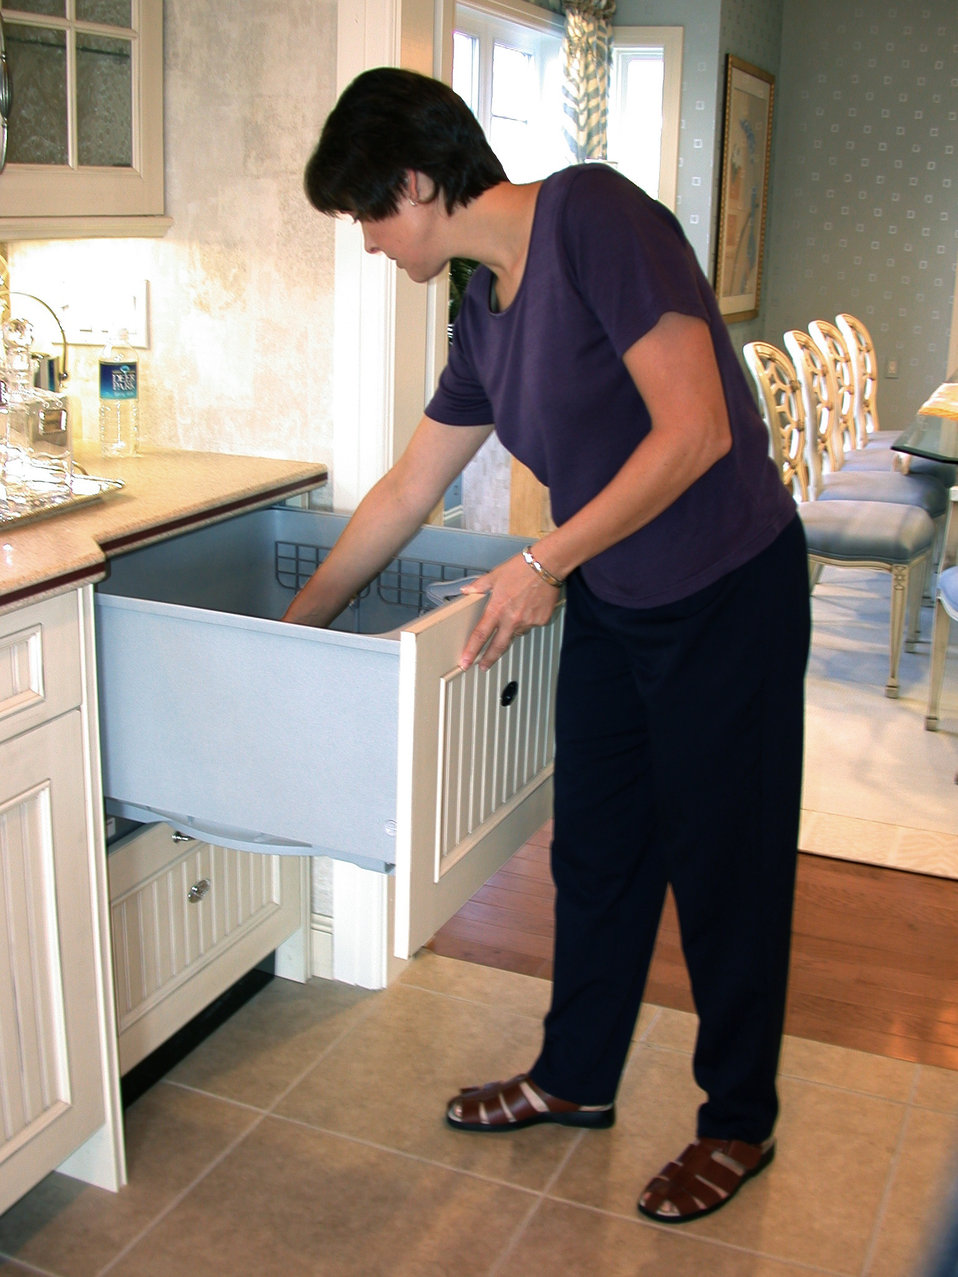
This 2000 image depicted a universally-designed, under-the-counter dishwasher that was being loaded by a standing, seemingly unimpaired woman. Alternate locations and installations for many appliances may work better for many people. This woman was reaching into a shallow, drawer-style dishwasher that had been mounted just beneath the counter next to the kitchen sink. This reduced the amount of bending and reaching that was necessary, in order to load this appliance.